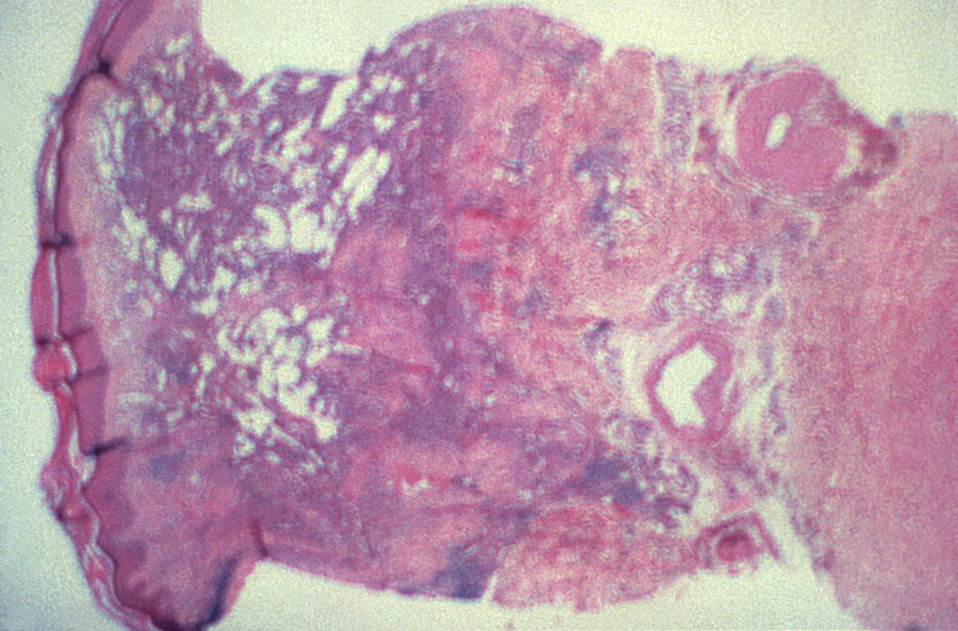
Under a low magnification, this photomicrograph depicts the histopathologic changes seen in human skin biopsy specimen due to Kaposi's sarcoma. Of importance is the normal appearance of the most superficial epidermal layer on the far left, which was overlying the dermal layer, which contained a cellular infiltrate, and a proliferation of vascular elements.